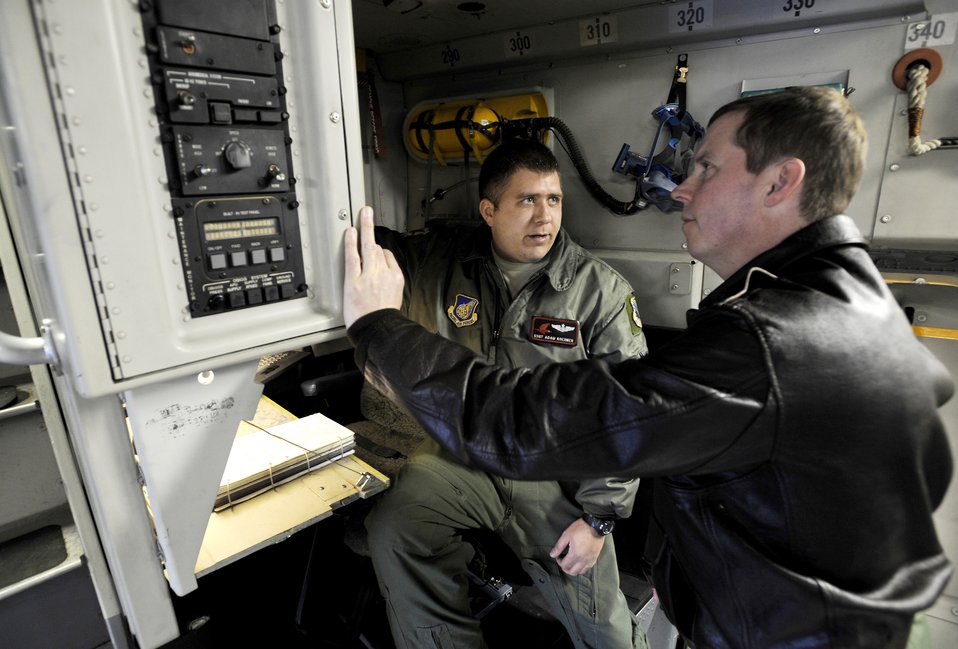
Commander flies C-17

Staff Sgt. Adam Koerner explains the egress procedures of a C-17 Globemaster III to Col. Thomas Bergeson before a flight at Elmendorf Air Force Base, Alaska, March 26, 2010. The flight includes a KC-135 Stratotanker refuel, tactical arrivals and departures at Allen Army Airfield and low-level flying. Colonel Bergeson is the 3rd Wing commander and Sergeant Koerner is a loadmaster assigned to the 517th Airlift Squadron here.